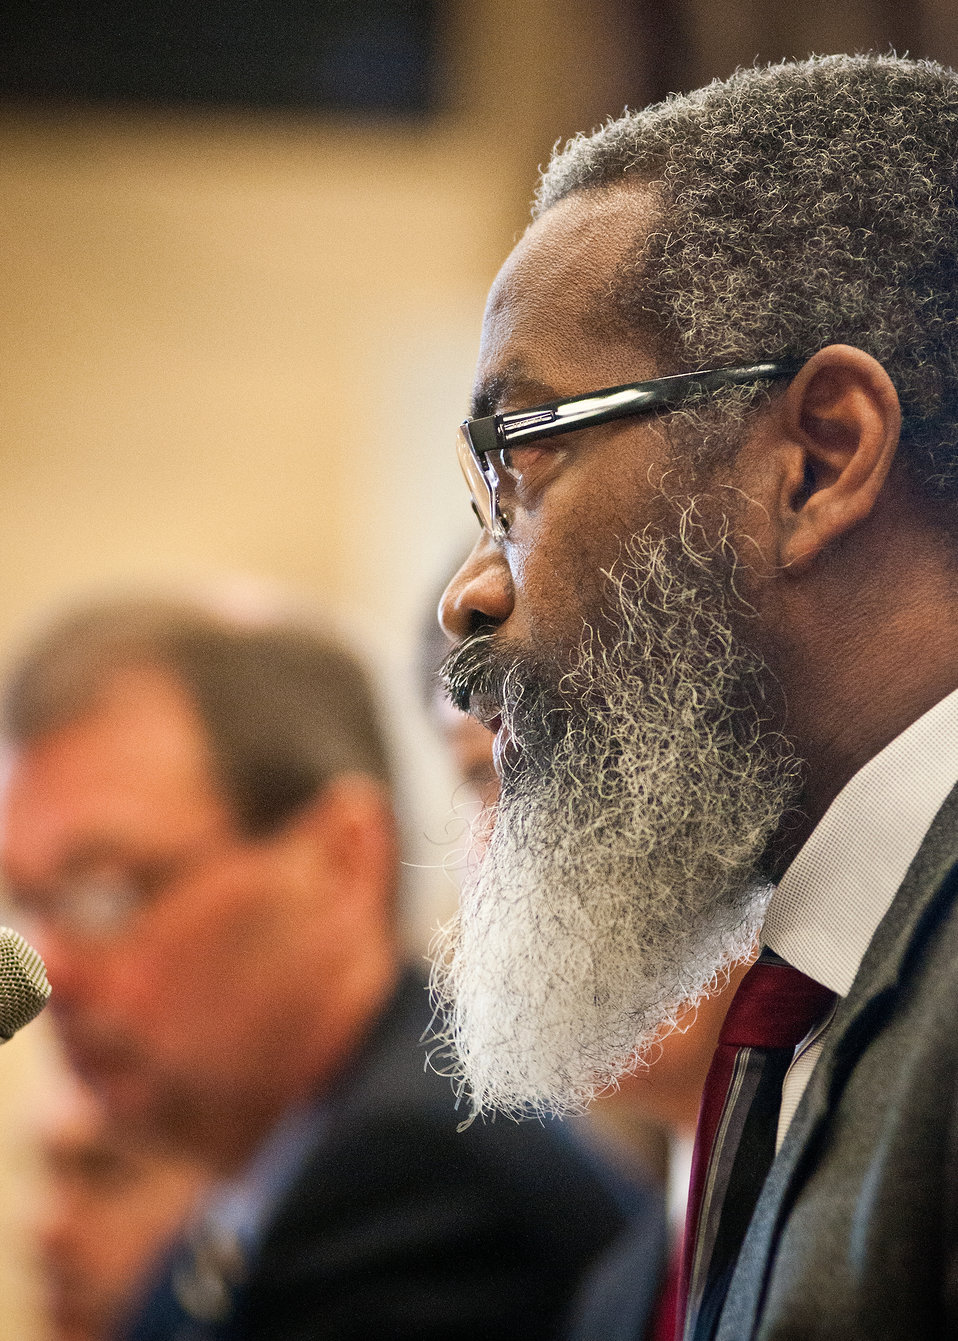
Dr. Gregory Parham, Administrator, Animal and Plant Health Inspection Service answers a questions while testifying on Capitol Hill with Ed Avalos, Undersecretary Marketing and Regulatory Programs and representatives of the Marketing and Regulatory Program agencies before the House Agriculture Appropriations Subcommittee on the agencies fiscal year 2013 budget requests in Washington, D.C., Tuesday, March 6, 2012.